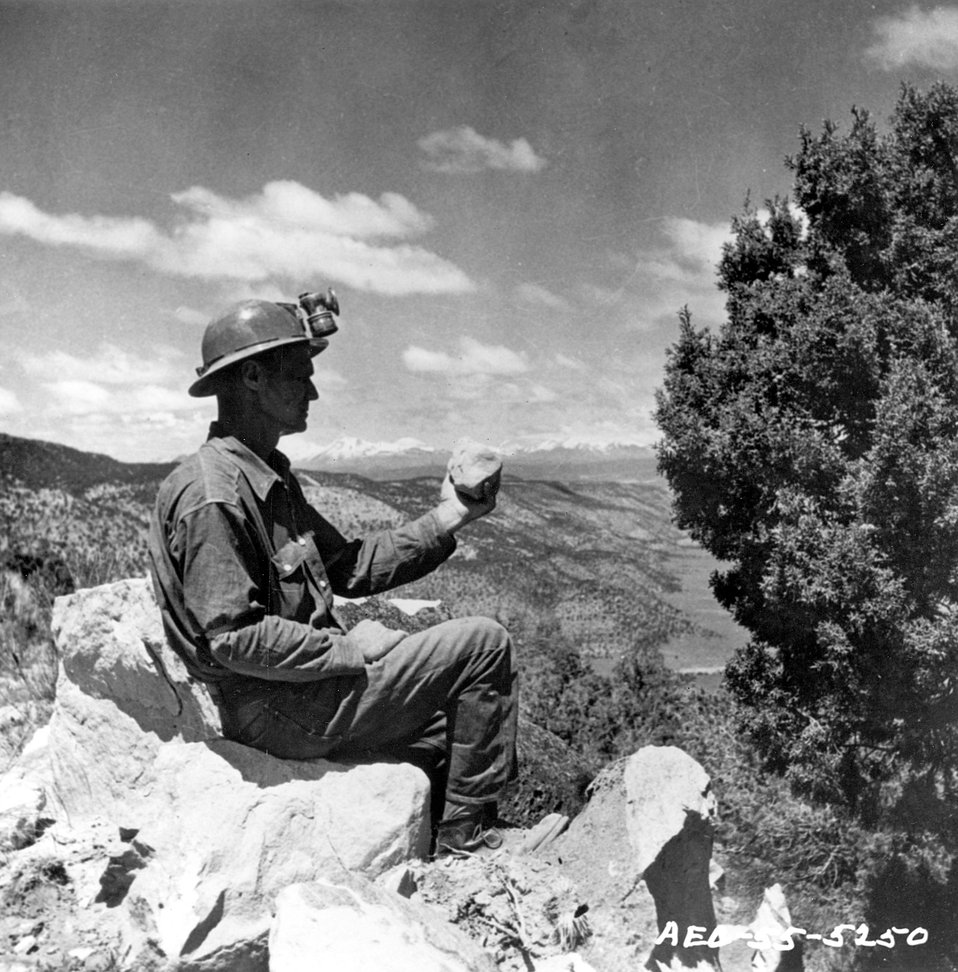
There are over 1,000 people mining uranium ores in the Colorado Plateau. A Typical miner holds a large chunk of high-grade ore, bright yellow in color. c. 1955